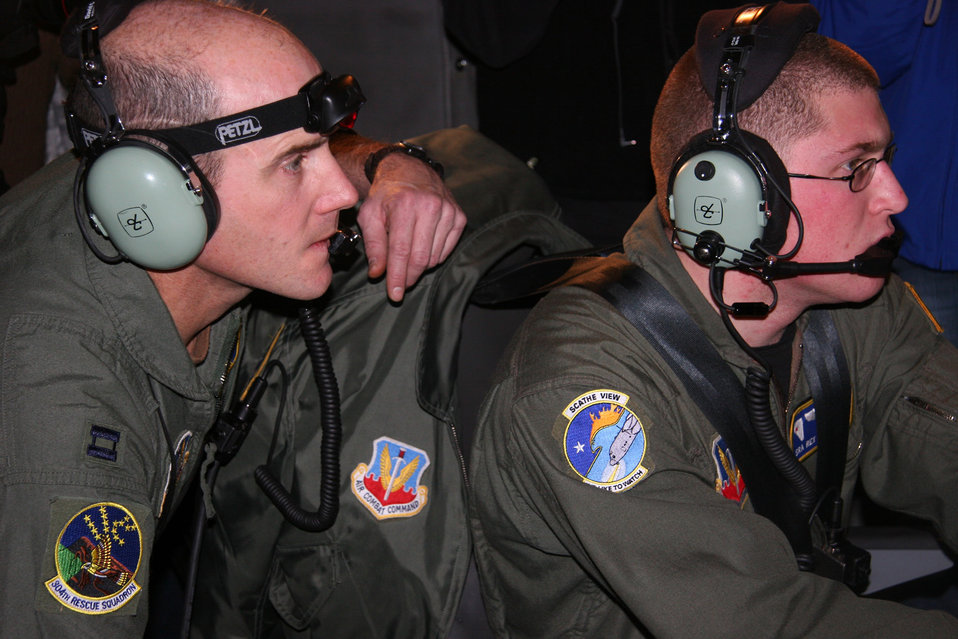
Oregon, Nevada Reservists join search for missing trio

Capt. Ross Willson (left) directs an image analyst to specific coordinates while flying in a C-130H over Mt. Hood, Ore., Dec. 16. Captain Willson, a combat rescue officer from the 304th Rescue Squadron in Oregon, worked with members of the 152nd Airlift Wing from Nevada while aboard the cargo plane equipped with thermal imaging to search for three climbers who left Dec. 7 on what was to be a two-day trip climbing Mt. Hood. The 304th RQS also has two teams of pararescue specialists on the ground battling winds that reached up to 50 mph in an attempt to bring the stranded climbers off the mountain.